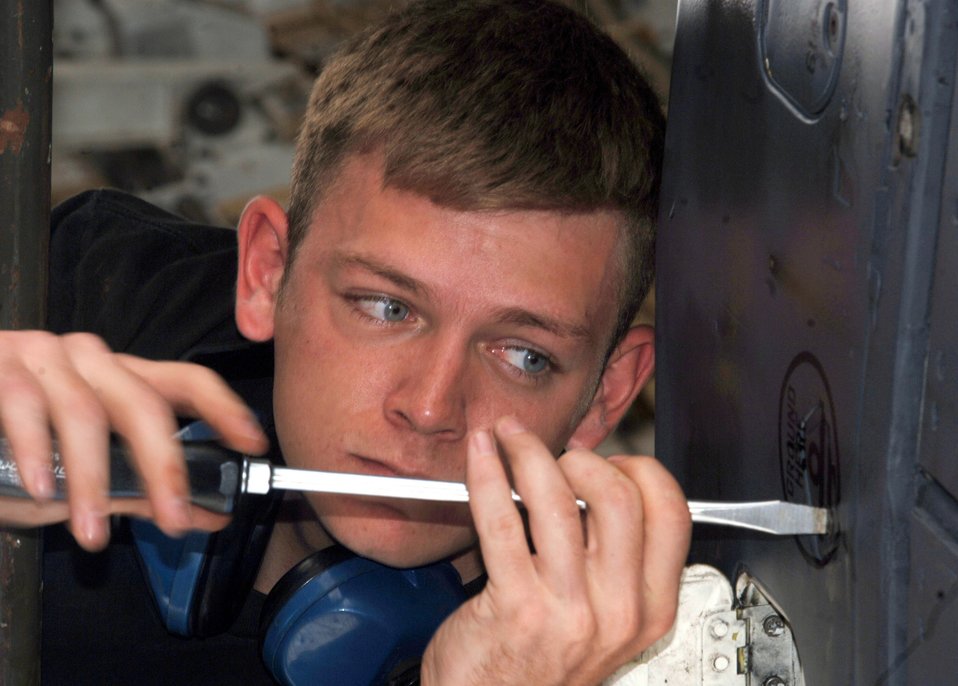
Lancer maintenance

ANDERSEN AIR FORCE BASE, Guam (AFPN) -- Senior Airman Terrance Lesko inspects the rotary launcher drive of a B-1B Lancer during his deployment here. Airman Lesko is a weapons specialist from the 28th Aircraft Maintenance Squadron at Ellsworth Air Force Base, S.D.